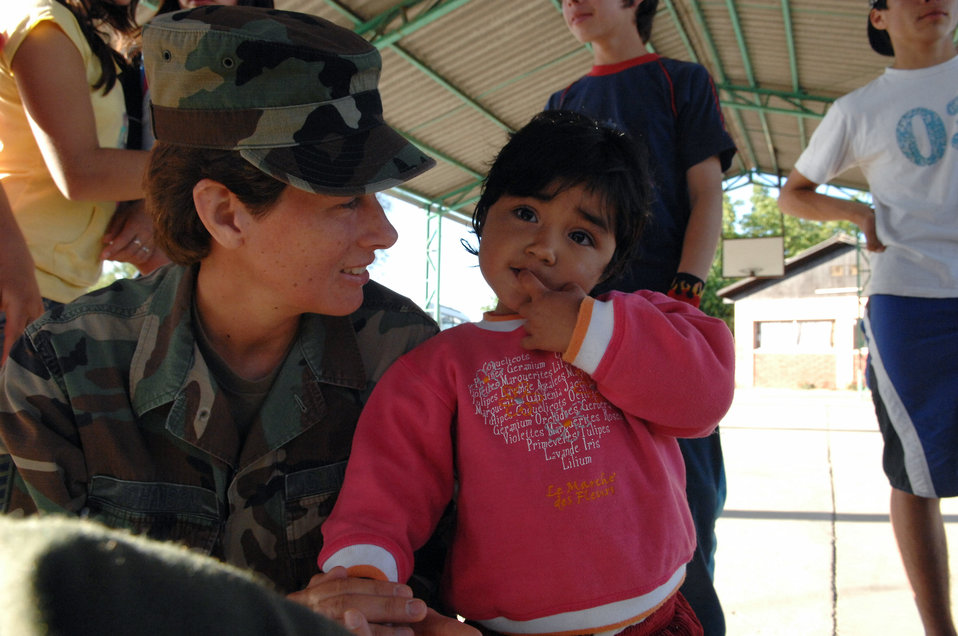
Airmen spend day with Chilean children

Staff Sgt. Mary Johanson holds a Chilean girl Oct. 30 at a home for abused or neglected children near Santiago, Chile. Sergeant Johanson is a 4th Combat Camera Squadron videographer from March Air Reserve Base, Calif.